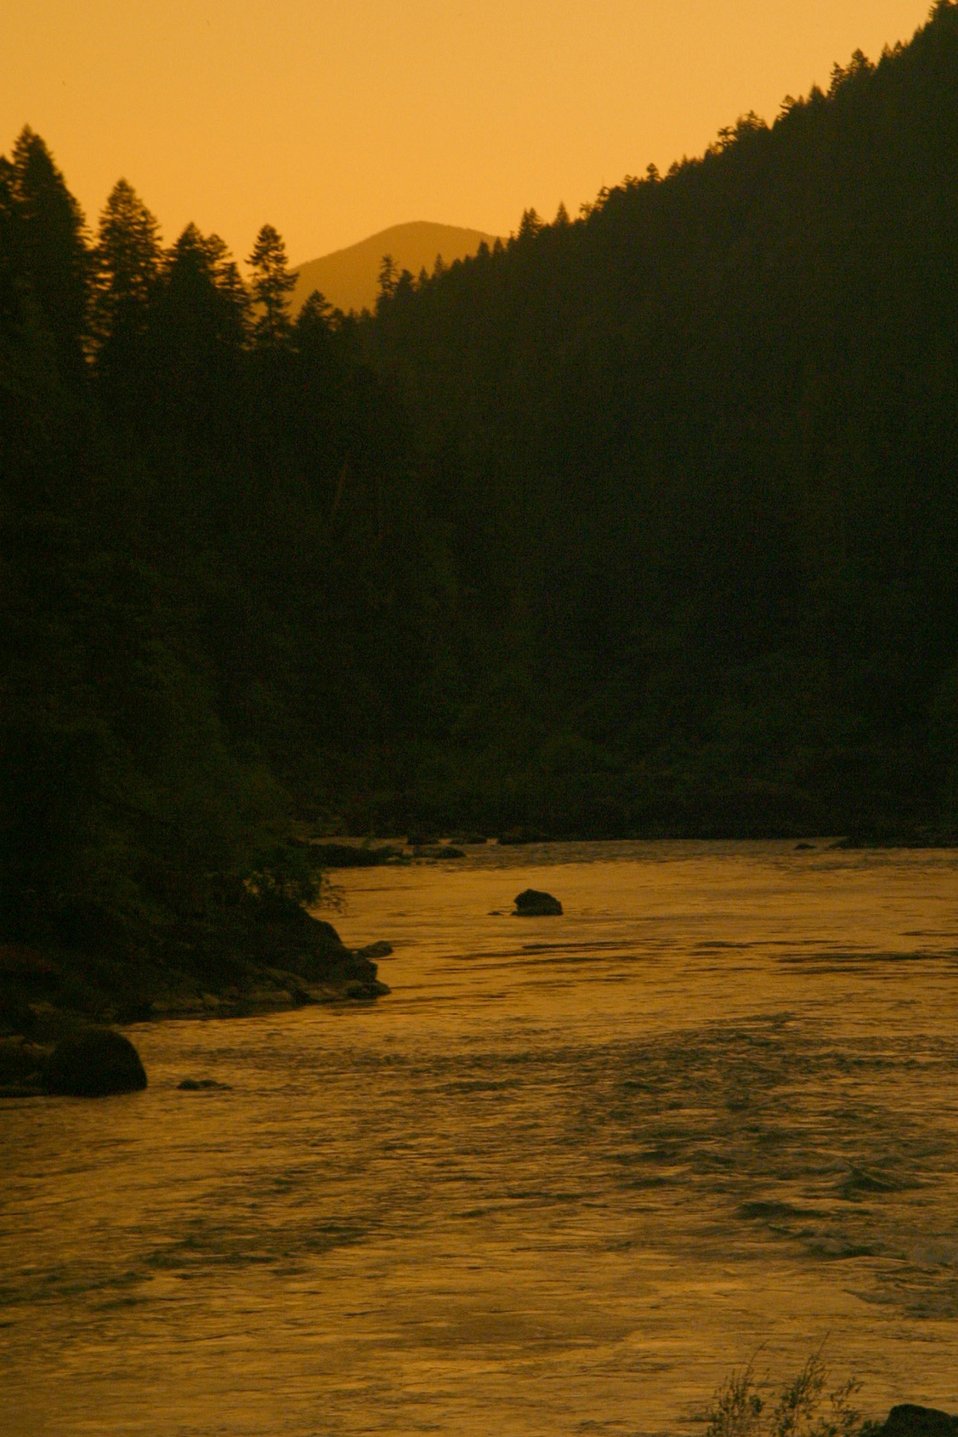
Wild section of the Rogue River from Grave Creek to Foster Bar May 19 to May 22.